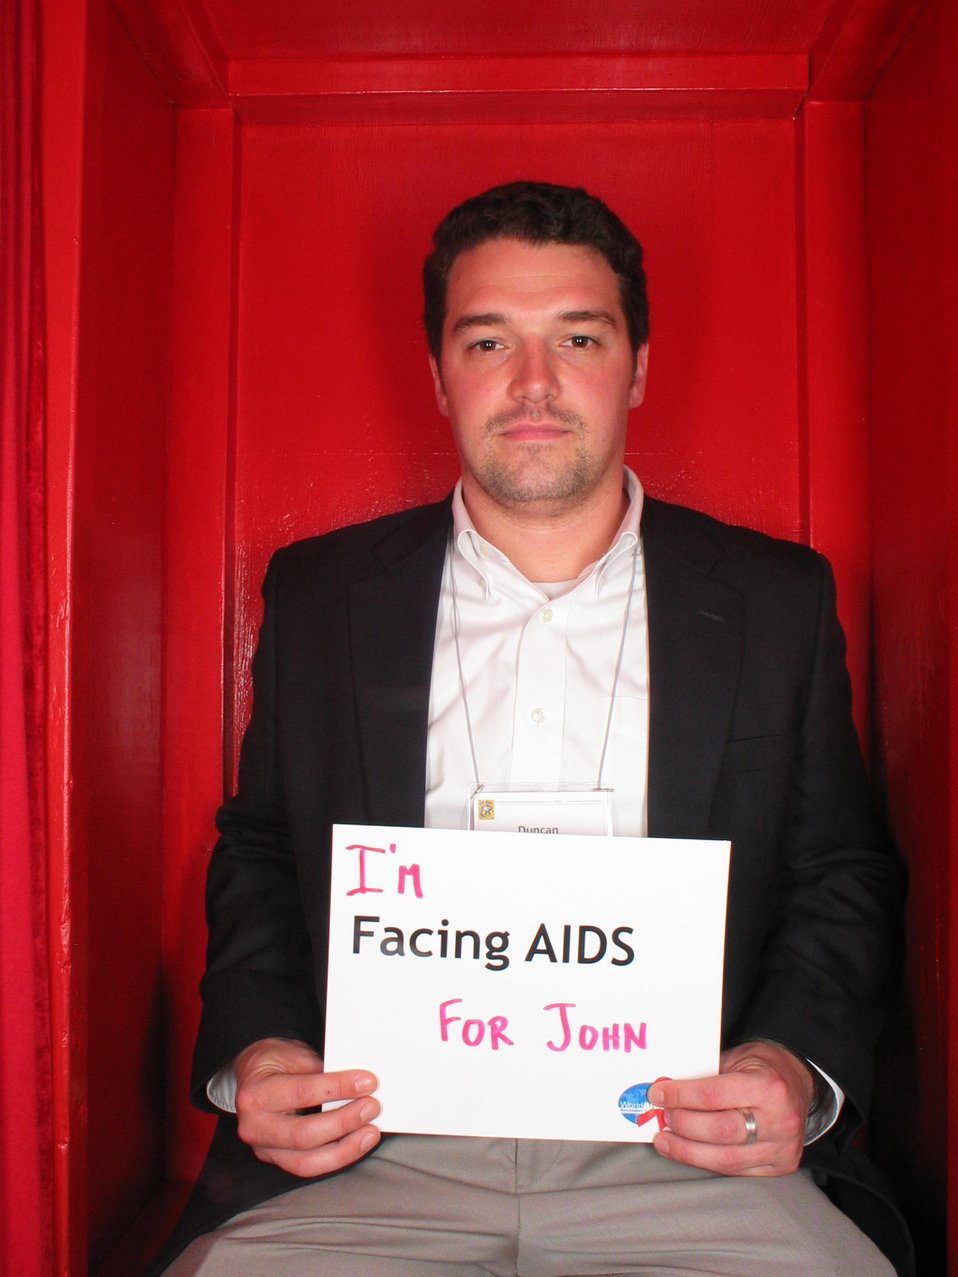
I'm Facing AIDS for John